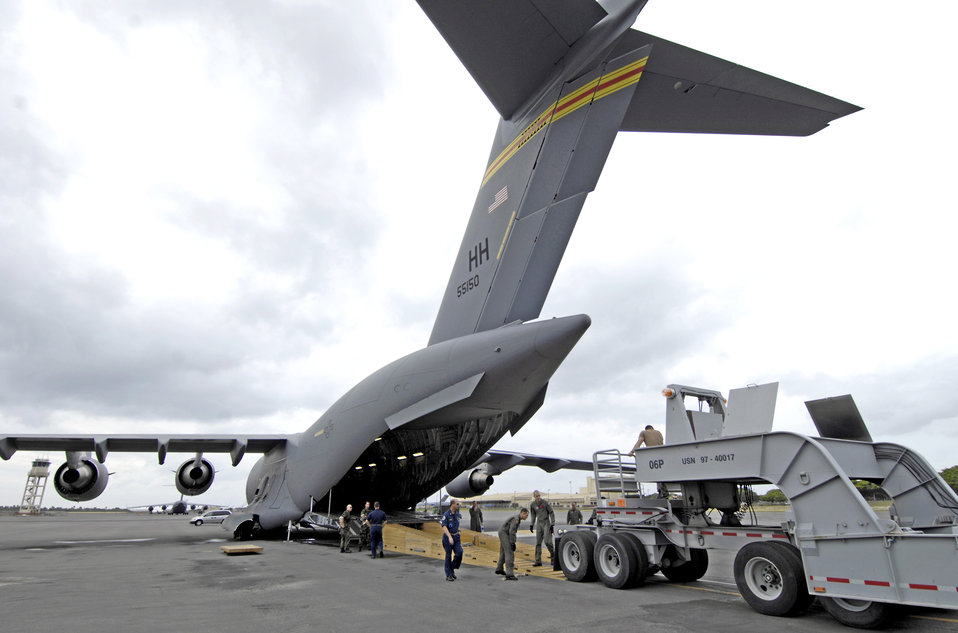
C-17 reaches dry dock

A dry dock transport is loaded on a C-17 Globemaster III Dec. 2 at Hickam Air Force Base, Hawaii. The flight was the first operational movement of a dry dock transport by a C-17. The aircraft is assigned to the 535th Airlift Squadron.